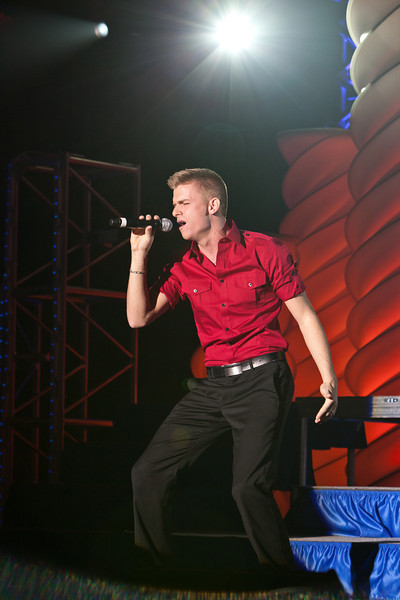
Fire man

Senior Airman Joseph Hardeman sings